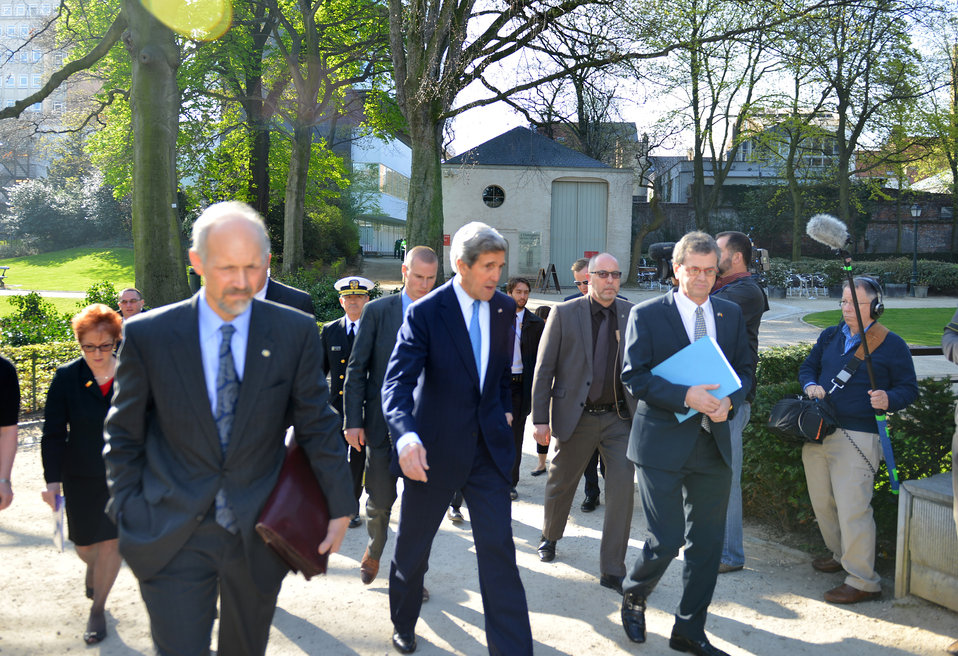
Secretary Kerry Walks to Egmont

U.S. Secretary of State John Kerry walks through a park from his hotel on the way to Egmont in Brussels, Belgium on April 24, 2013.